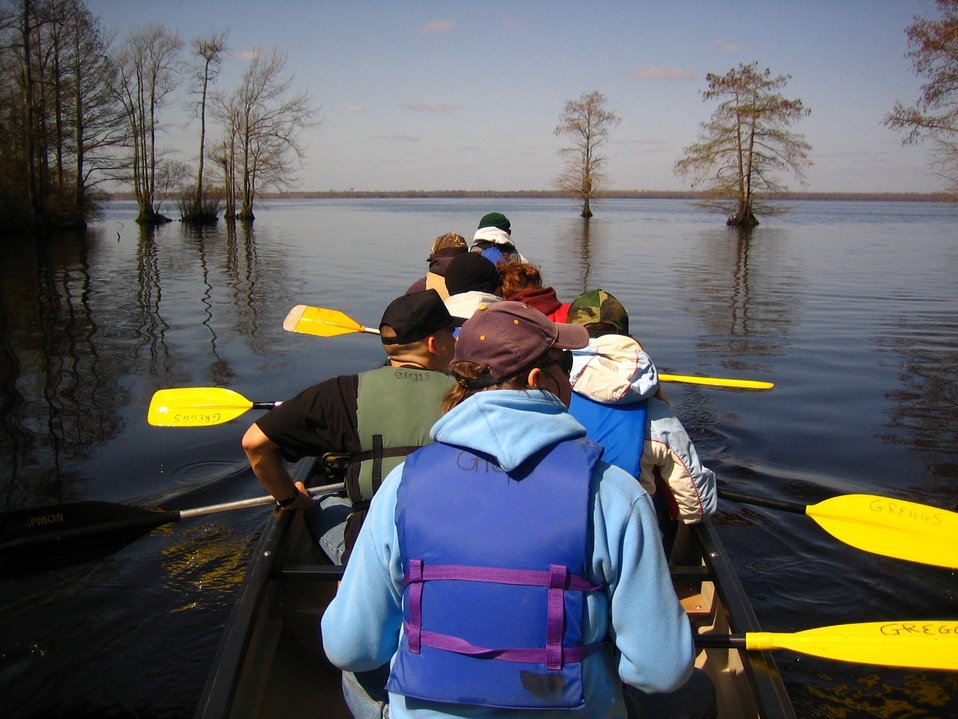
Paddling the refuge

Great Dismal Swamp National Wildlife Refuge.